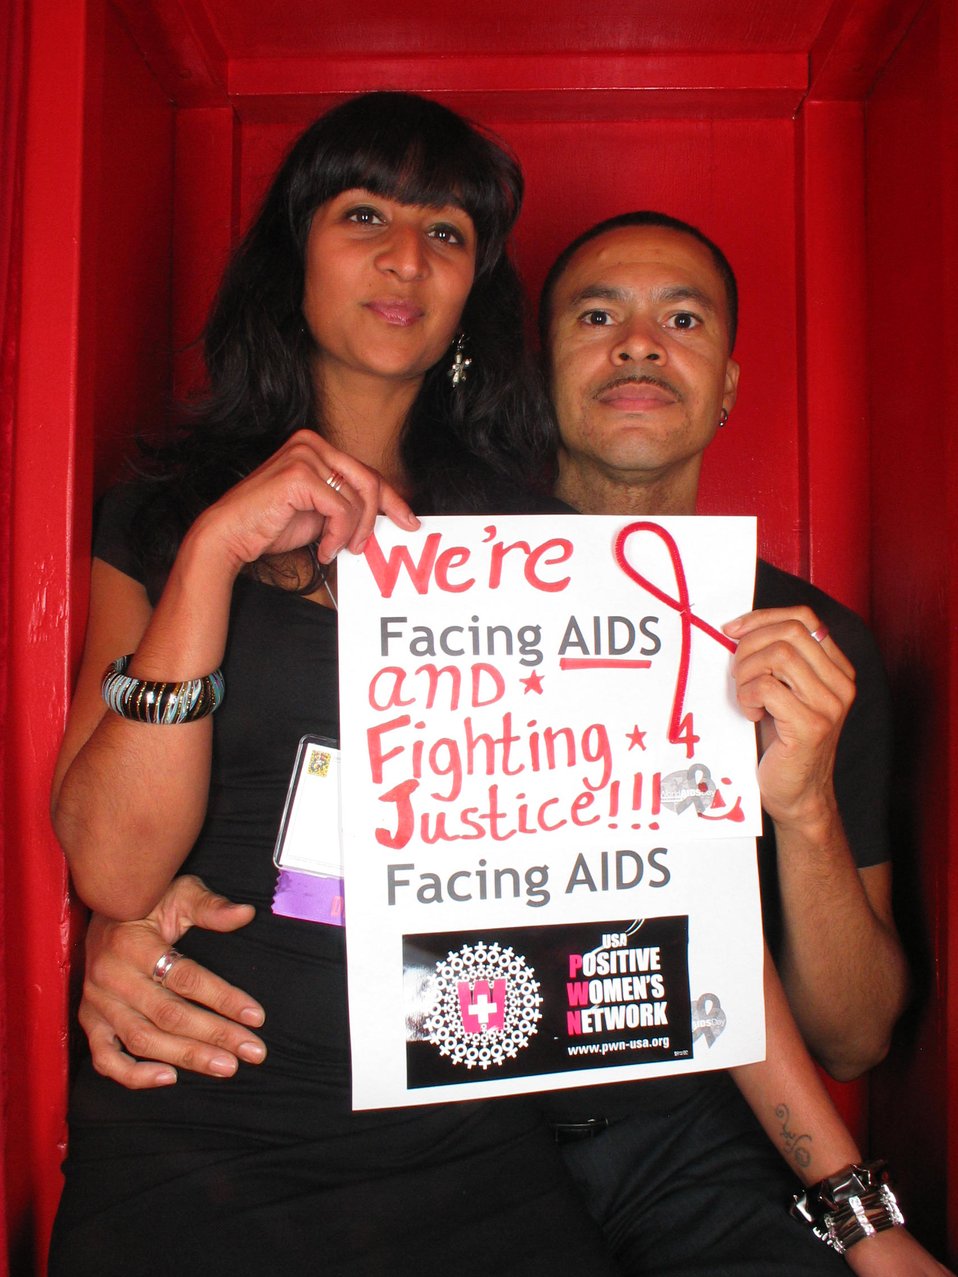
We're Facing AIDS and fighting 4 justice!!!